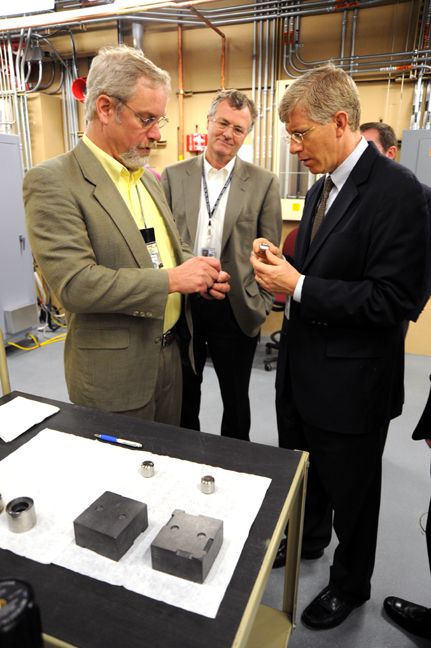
P-6250-18 72dpi

INL's Steve Johnson shows the Deputy Secretary a model of a plutonium heat source that is used to generate power and heat for remote space missions, while Deputy INL Director Dave Hill looks on.